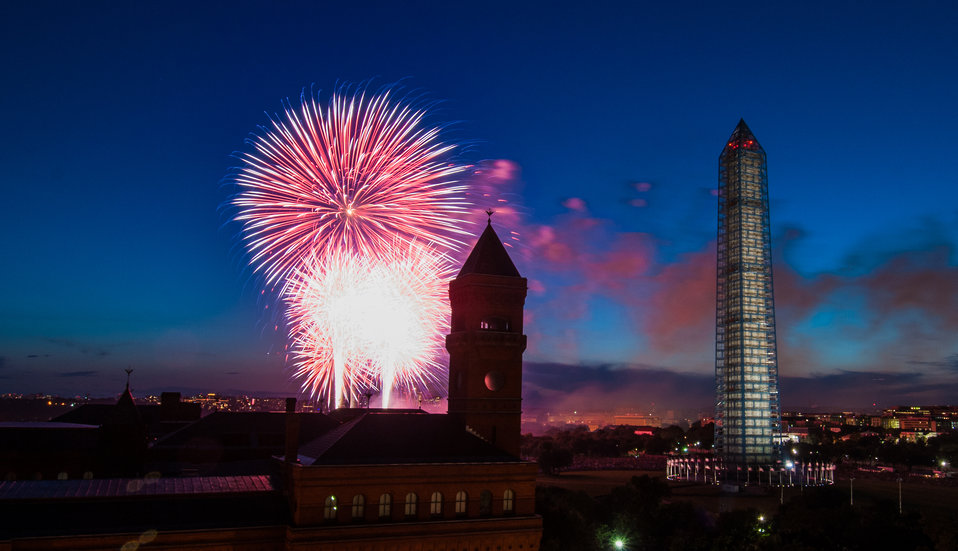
4th of July fireworks as seen from the U.S. Department of Agriculture (USDA) headquarters building, with the USDA Forest Service Yates Building in the foreground, left, and the Washington Monument in Washington, D.C., on July 4, 2013.